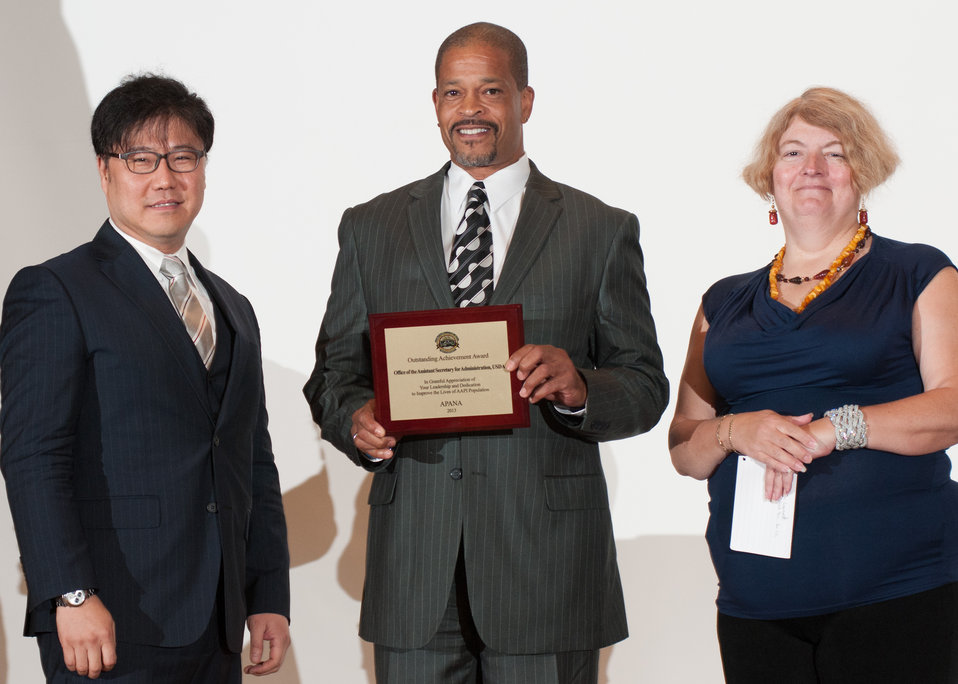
Asian Pacific American Network in Agriculture (APANA) President Justin Rhee, left, and Vice President Jennifer Painter, right, present an “Outstanding Achievement Award” for leadership and dedication to improve the lives of the Asian Americans and Pacific Islander (AAPI) population, to U.S. Department of Agriculture’s (USDA) Chief Human Capital Officer William P. Milton, Jr., who is accepting for himself and Acting Assistant Secretary for Administration Dr. Gregory Parham, representing Departmental Management whose accomplishments was ranked by the Office of Personnel Management as among the two top “best plans” across the Federal government, during the USDA Asian Pacific American Heritage Month Observance, at the USDA headquarters in Washington, D.C., on Thursday, May 23, 2013. This year’s theme is “Building leadership; Embracing the Cultural Values and Inclusions.”